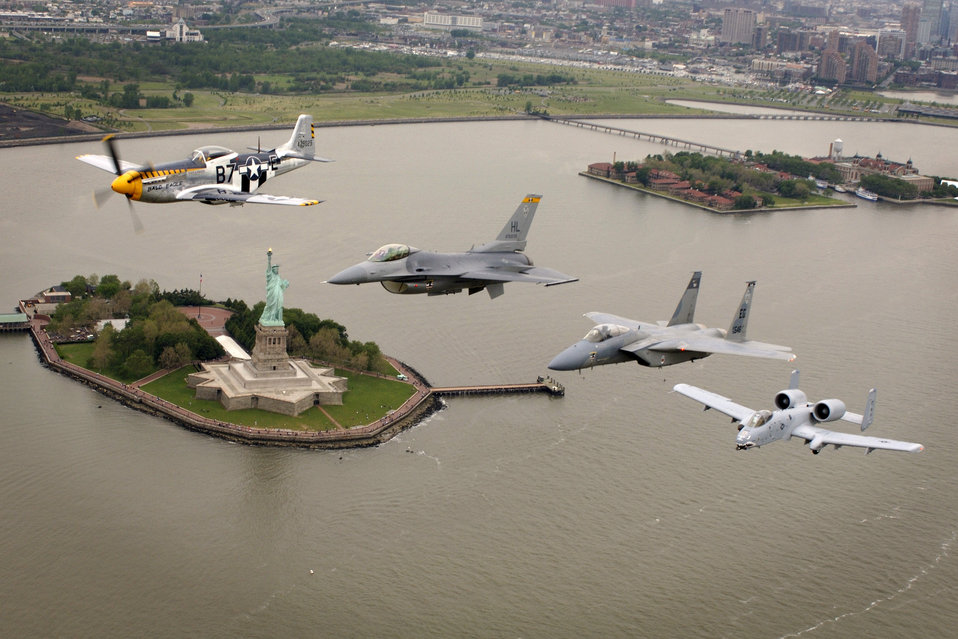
Heritage Flight over New York

A P-51 Mustang, flown by Jim Beasley; an F-16 Fighting Falcon, flown by Maj. Dax Cornelius from Hill Air Force Base, Utah; an F-15 Eagle, flown by Capt. Tony Bierenkoven from Eglin AFB, Fla.; and an A-10 Thunderbolt II, flown by Capt. Jeff Yost of Pope AFB, N.C., fly over the Statue of Liberty on Thursday, May 25, 2006.